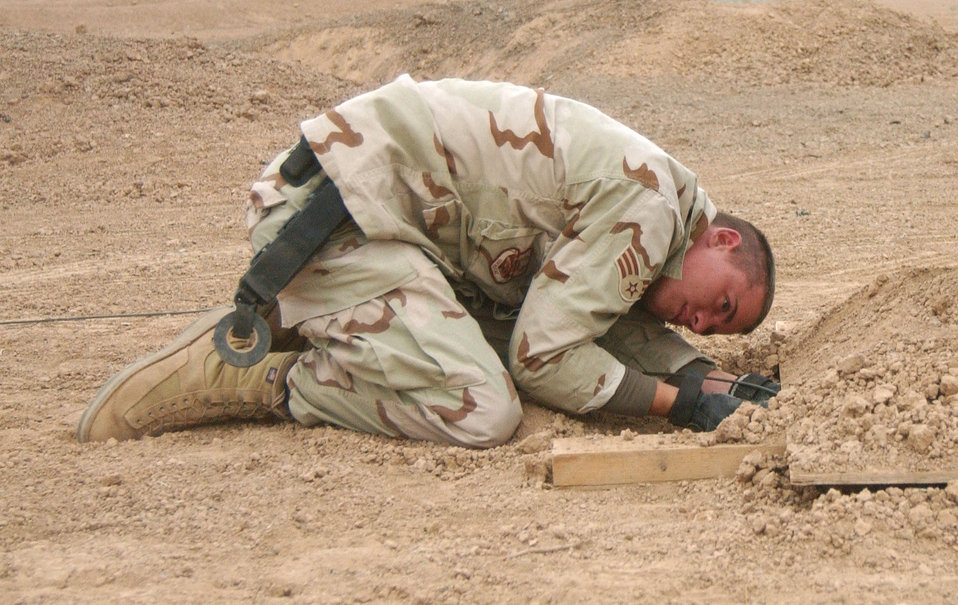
EOD Airmen play key role in Balad mission

BALAD AIR BASE, IRAQ -- Senior Airman Aaron Johns places a plastic explosive charge under a barrel of contaminated aviation fuel. Airmen Johns is deployed from Dover Air Force Base, Del.